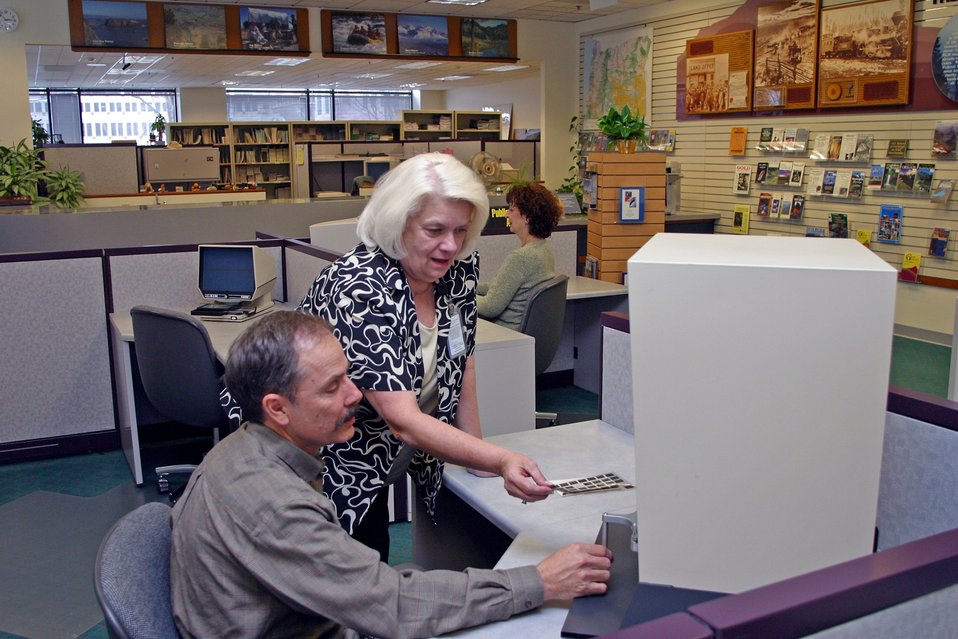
BLM's Land Office provides information about land status, minerals, maps, and general information to the public.